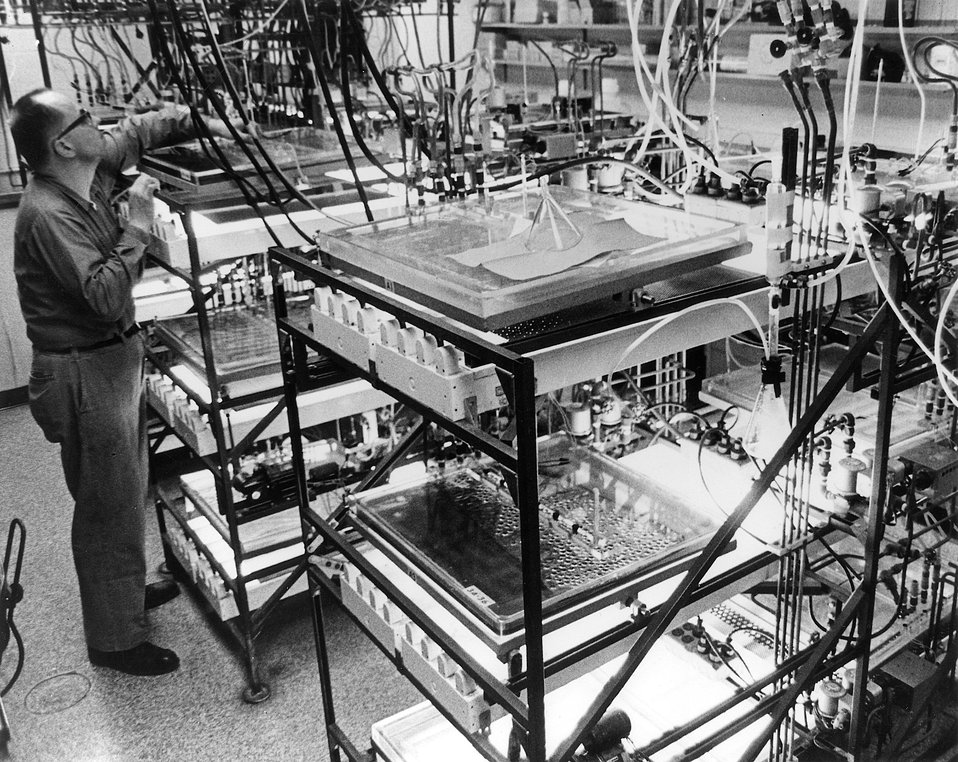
Hybrid algae are grown in these constantly moving trays using heavy water instead of light water.
c.1972